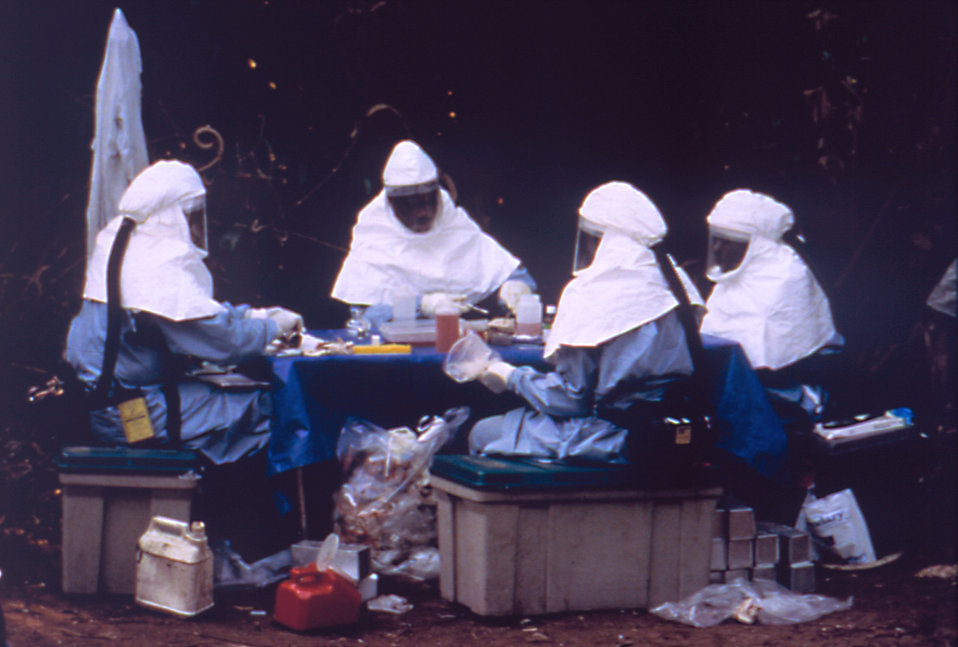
Ebola Testing